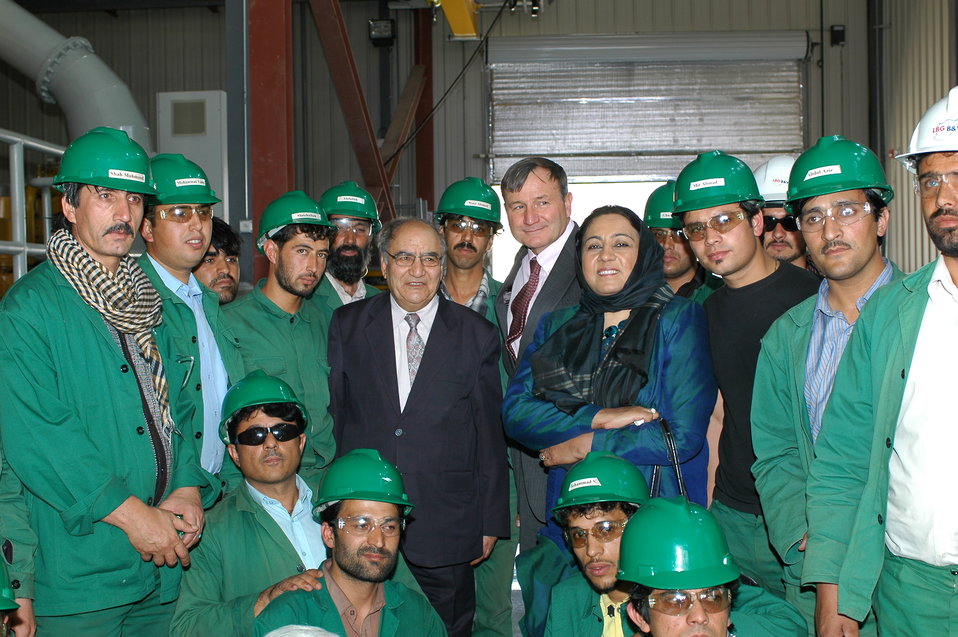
105 MW Tarakhil Power Plant Handover